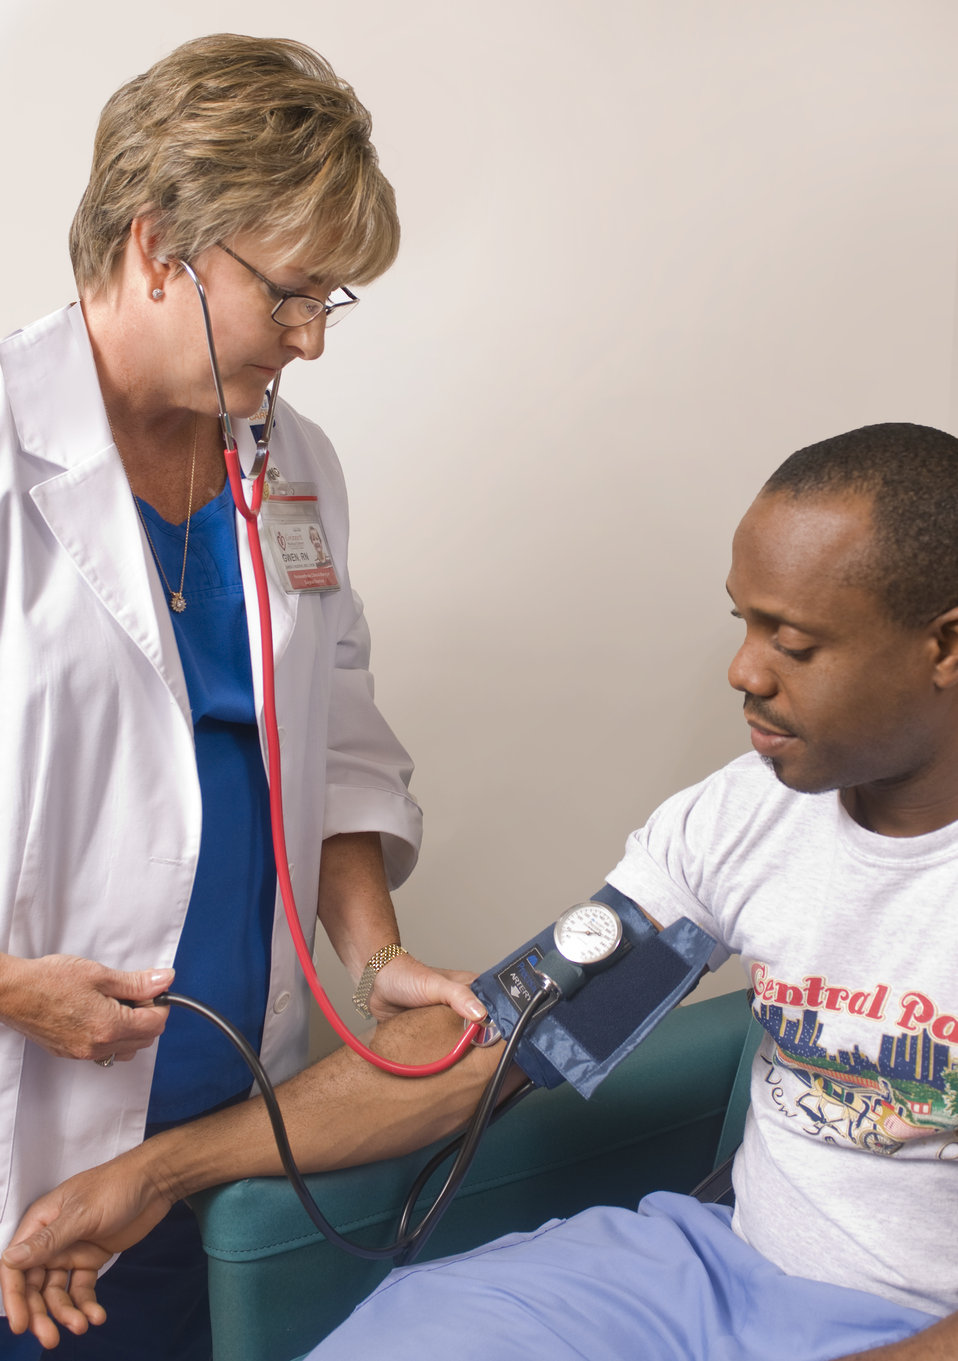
This image depicts a female clinician in the process of conducting a blood pressure examination upon a seated male patient in a clinical setting. The healthcare provider was using a sphygmomanometer, consisting of a pressurized cuff encircling the patient's right upper arm, and a monitor indicating changes in pressure within the cuff, as well as a stethoscope in order to listen for, and record the sounds indicative of the high (systolic), and low (diastolic) pressure values used to measure a patient's blood pressure.